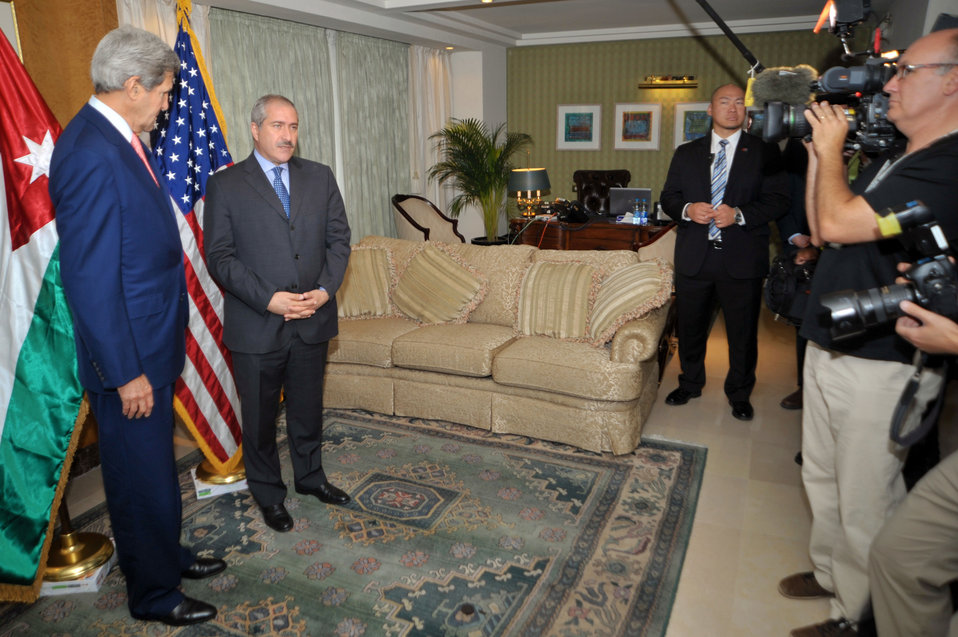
Secretary Kerry and Jordanian Foreign Minister Judeh Address Reporters

U.S. Secretary of State John Kerry and Jordanian Foreign Minister Nasser Judeh address reporters after their meeting in Amman, Jordan, on July 16, 2013.